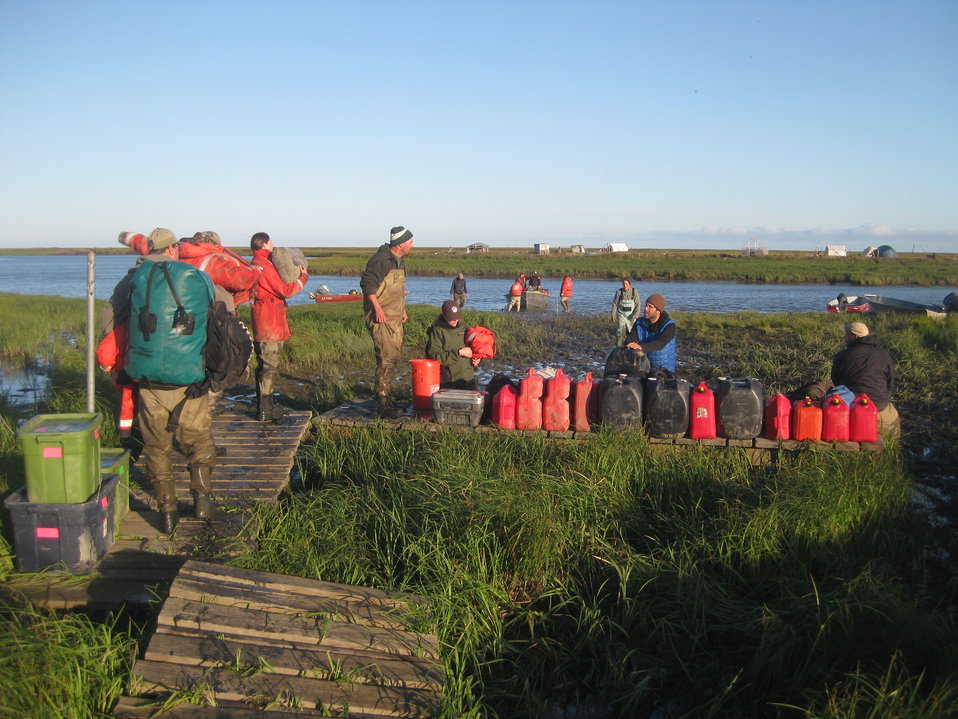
Packing up

All field camps need to be packed in and out. One of the camp sites for the cackling goose project is located at Old Chevak. All fuel, water, food, and gear needed for the 6 day effort has to be flown in by float plane or taken by boat to Chevak where it is brought back by plane or is stored in Chevak until the next field season.

USFWS Yukon Delta NWR